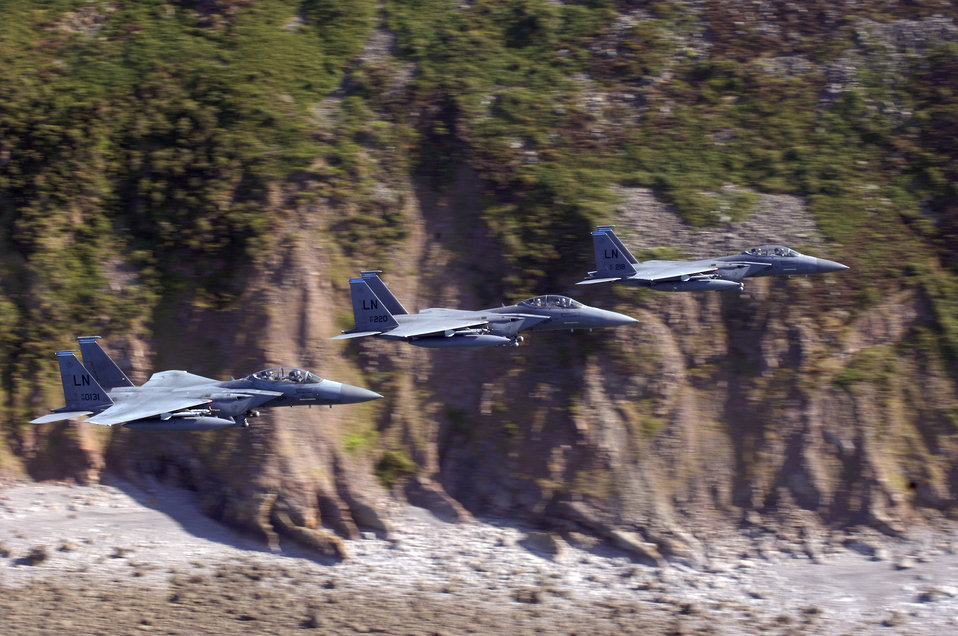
Following a flight of Eagles

Three F-15E Strike Eagles from the 492nd Fighter Squadron at Royal Air Force Lakenheath, England, cruise at 300 mph along the cliffs of the southwestern English coast. The aircrews were on the way to an area off the coast where they could practice basic surface attack techniques.